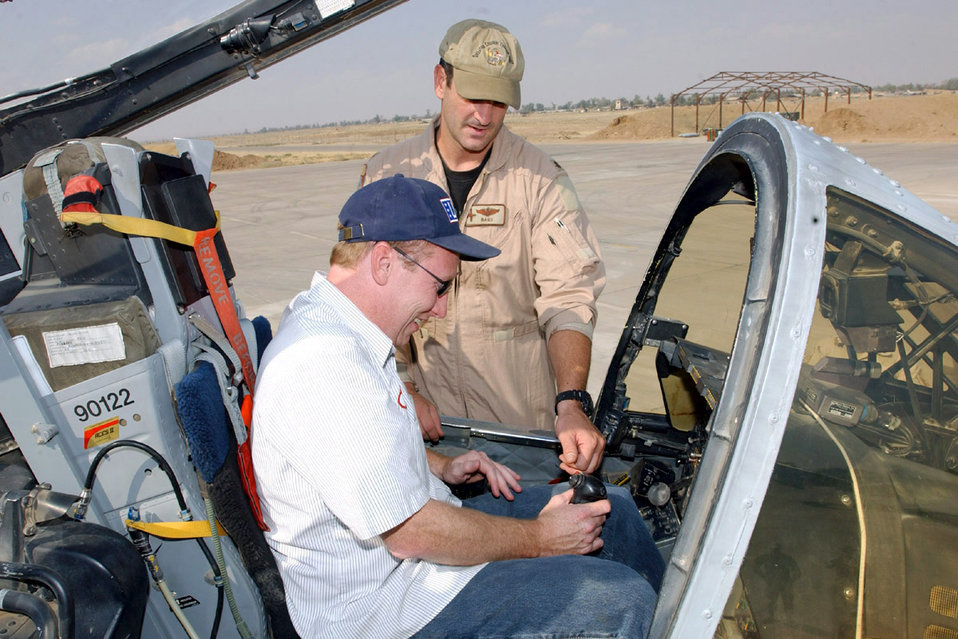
Laugh Factory Comedy Tour

KIRKUK AIR BASE, Iraq -- Maj. Mark Ernewein explains the A-10 Thunderbolt II's equipment to comedian Butch Bradley during a tour here Oct. 2. Four comedians from the USO Laugh Factory Comedy Tour entertained more than 300 Kirkuk residents. Ernewein is assigned to the 303rd Fighter Squadron.